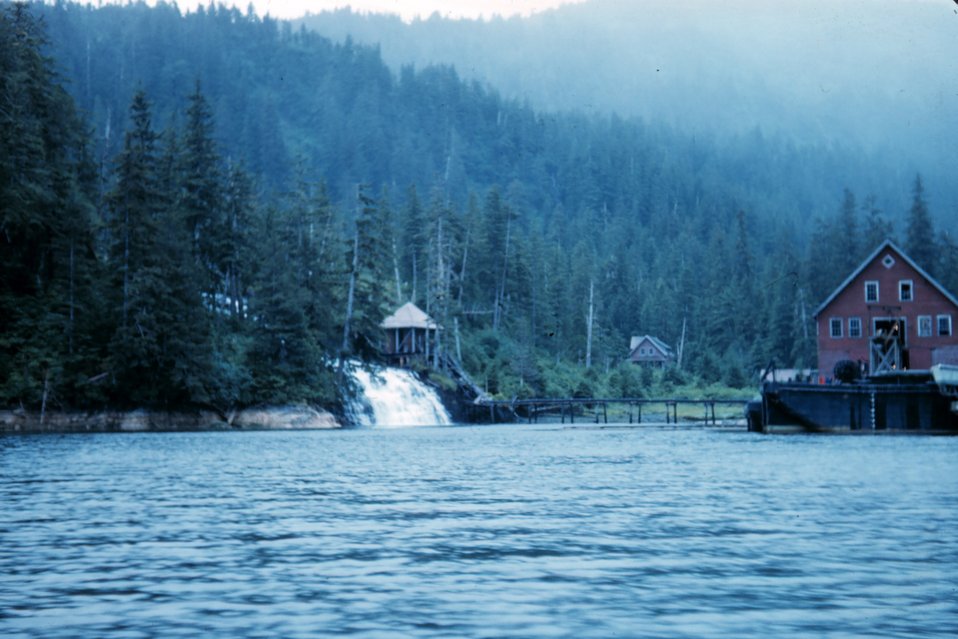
The herring plant at Big Port Walter